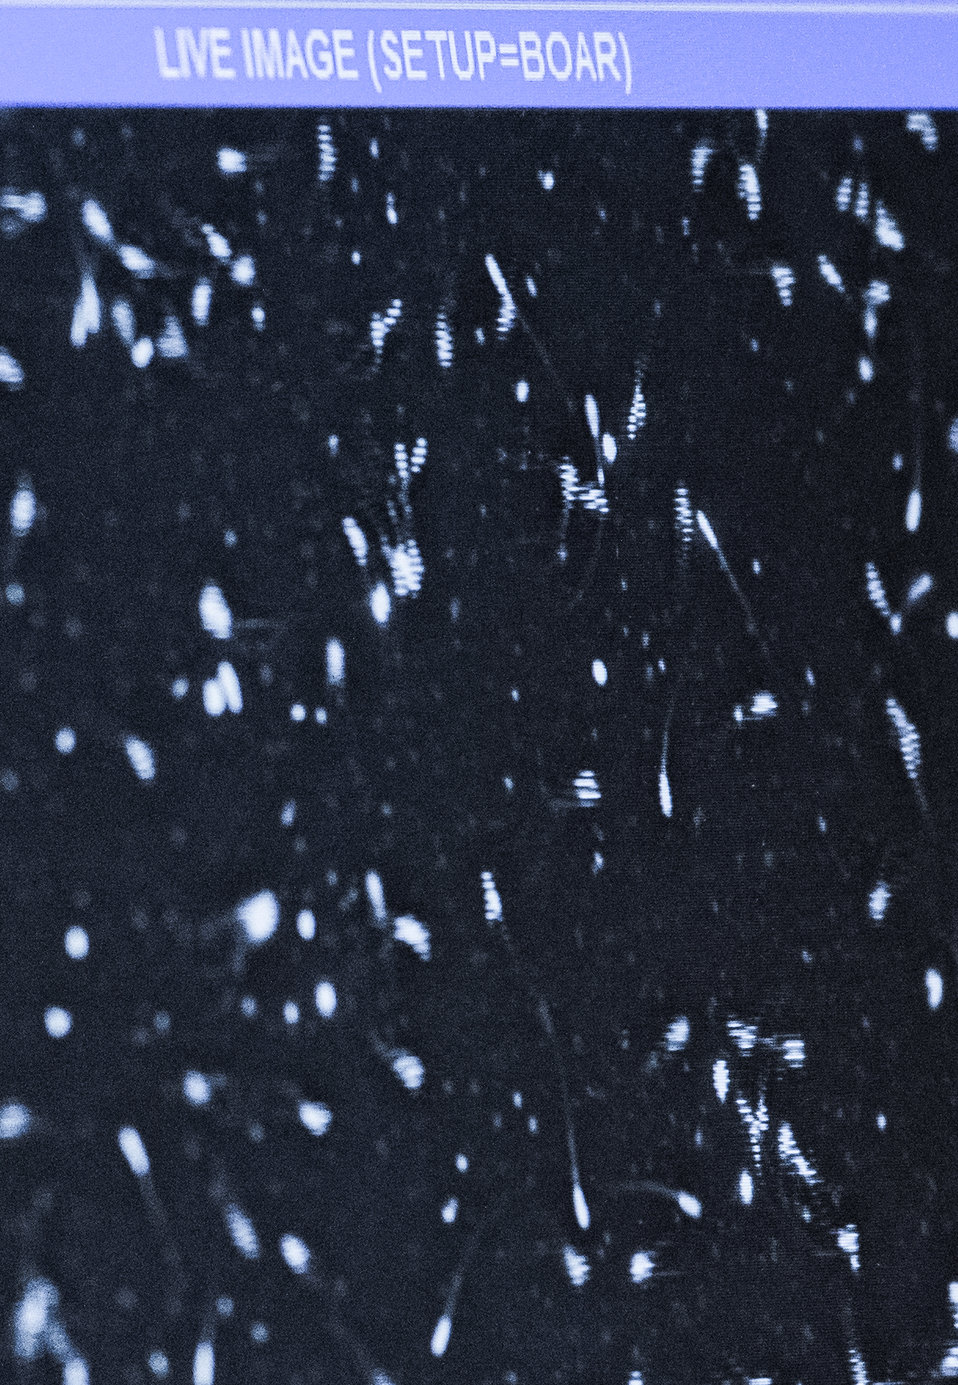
Live Boar sperm appears on the screen as it is being scanned by an electronic microscope to evaluate their mortality, at the U.S. Department of Agriculture (USDA), Agriculture Research Service (ARS), National Center for Genetic Resources Preservation (NCGRP), in Ft. Collins, CO, on Wednesday, Nov. 6, 2013.